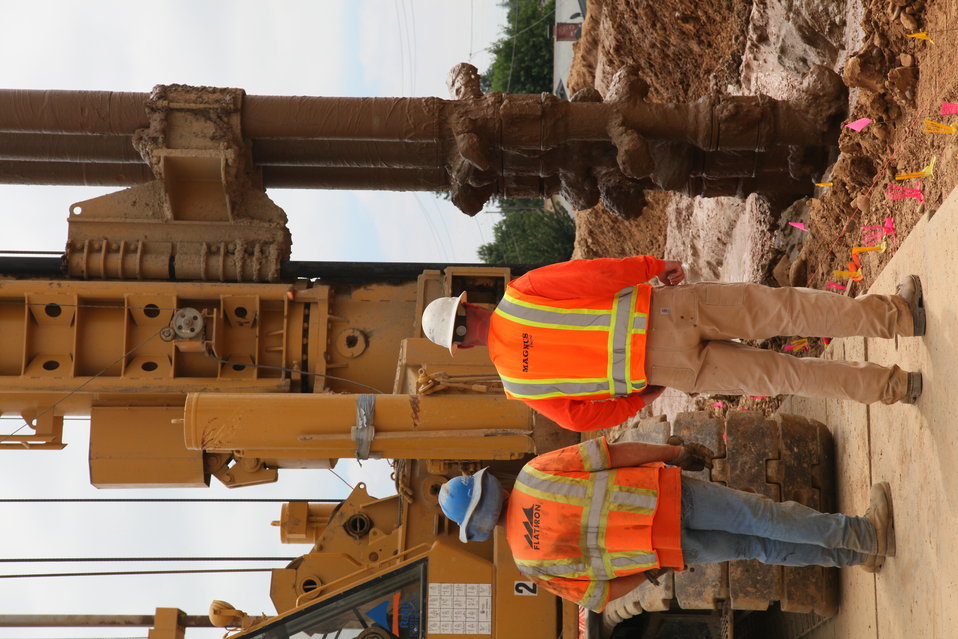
Corps moves forward with Marysville Ring Levee project

MARYSVILLE, Calif. – Stirring paddles on a big rig crane lift out of a slurry wall mix at the Marysville Ring Levee project in Marysville, Calif., July 13. The Corps is using a deep soil mixing process, which combines clay bentonite and cement with existing soil to create a thick, solid surface that won’t allow water to leak through or beneath the levee, to upgrade a 4,000-foot section of the levee as part of the project’s first phase. The yellow and pink flags on the levee are laid out to precisely identify the exact location for insertion of the augers. This ensures a continuous and more homogenous wall. Once complete, the slurry wall will be three-feet wide by 110-120 feet deep, and located in the center line of the levee. This $10.8 million phase of the project has been funded by the American Recovery and Reinvestment Act of 2009 and is scheduled to be completed in November 2011.